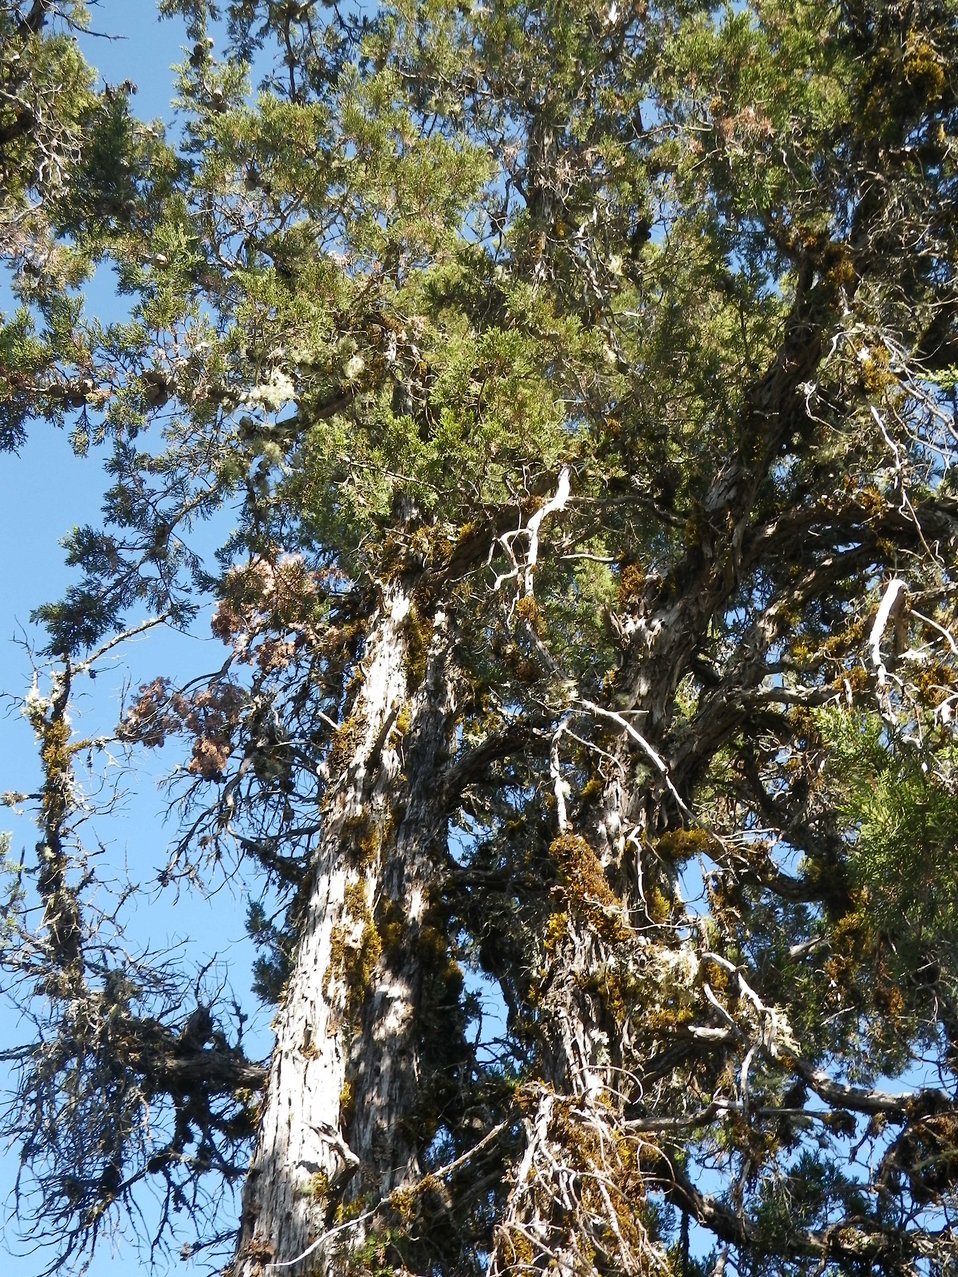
Santa Cruz cypress (Hesperocyparis abramsiana) is a tree in the cypress family found in the Santa Cruz Mountains of Santa Cruz and San Mateo Counties, California. This is a mature cypress located within the Eagle Rock population at Big Basin Redwoods State Park.